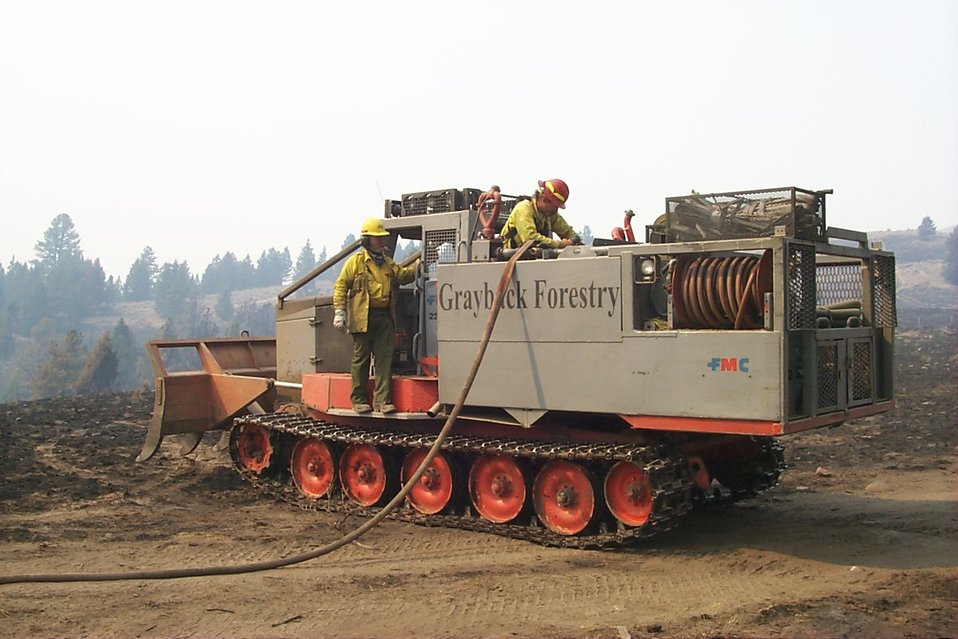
Dozer Fire Clearwater Fire Salmon Field Office USRD Upper Snake River District